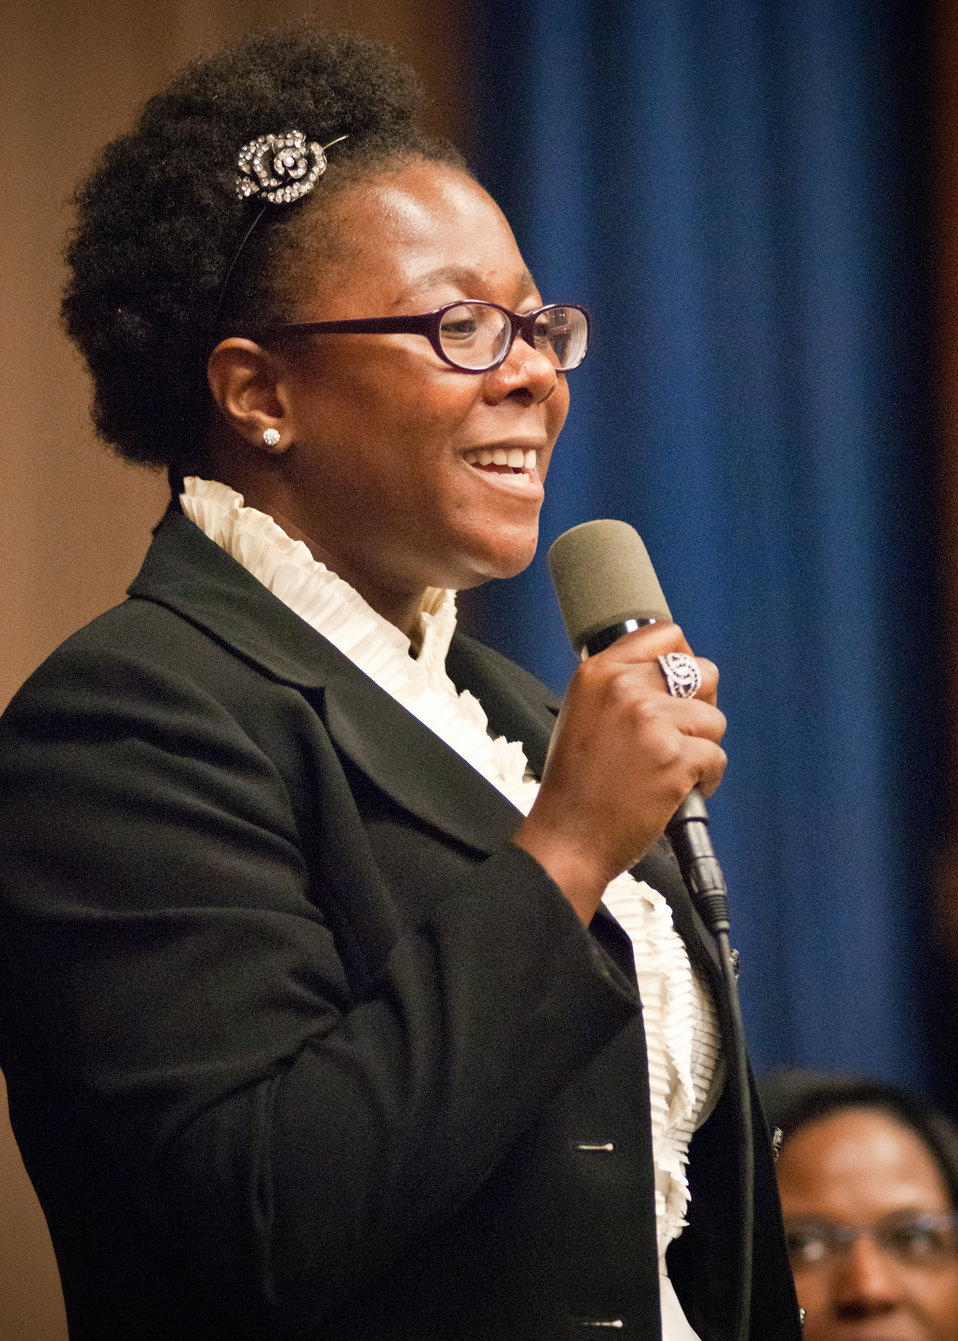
Jeana Harbison, Planning Committee Co-Chair offers closing remarks during the U.S. Department of Agriculture National Disability Employment Awareness Month event in Washington, DC, on Wednesday, October 5, 2011. Agriculture Secretary Tom Vilsack is dedicated to establishing the USDA as the lead Federal agency in employing individuals with disabilities. The theme for the event is “Profit by Investing in Workers with Disabilities.” USDA is committed to ensuring that all our programs are accessible and inclusive of individuals with disabilities.